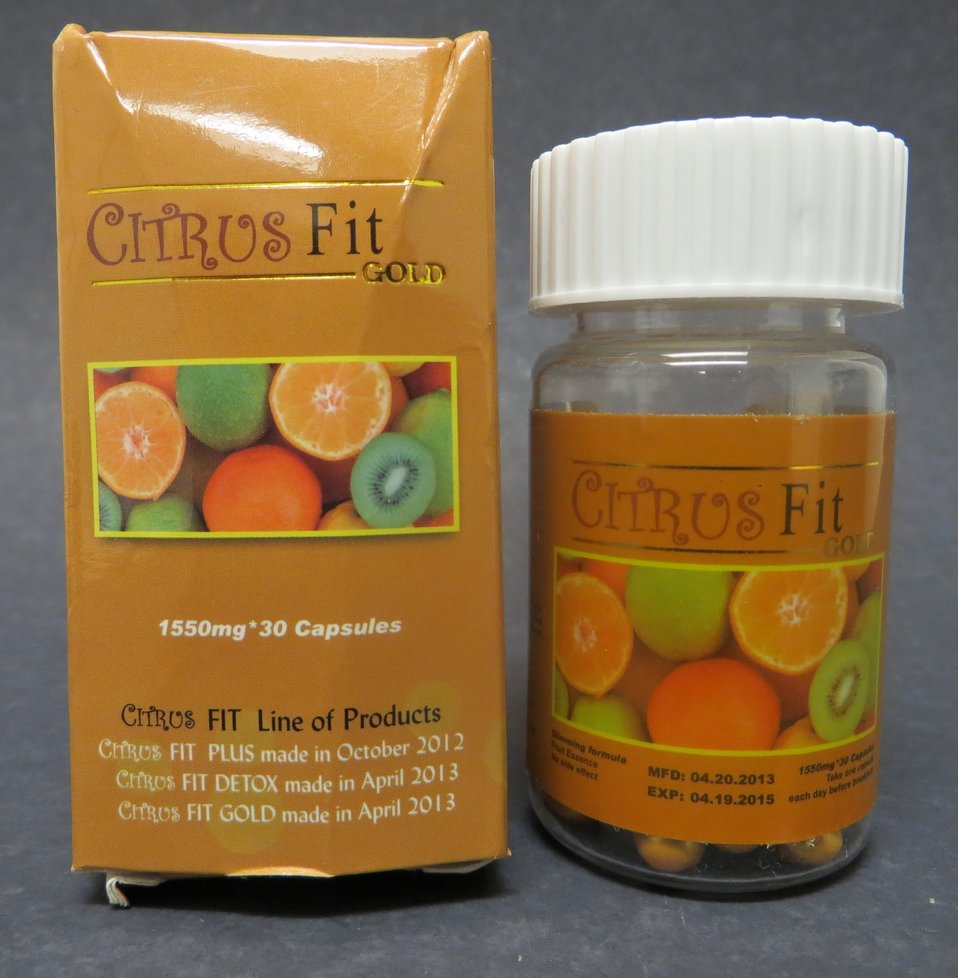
Citrus Fit Gold

January 28, 2014 - The FDA is advising consumers not to purchase or use Citrus Fit Gold, a product promoted and sold as a dietary supplement for weight loss. The product was found to contain undeclared sibutramine.